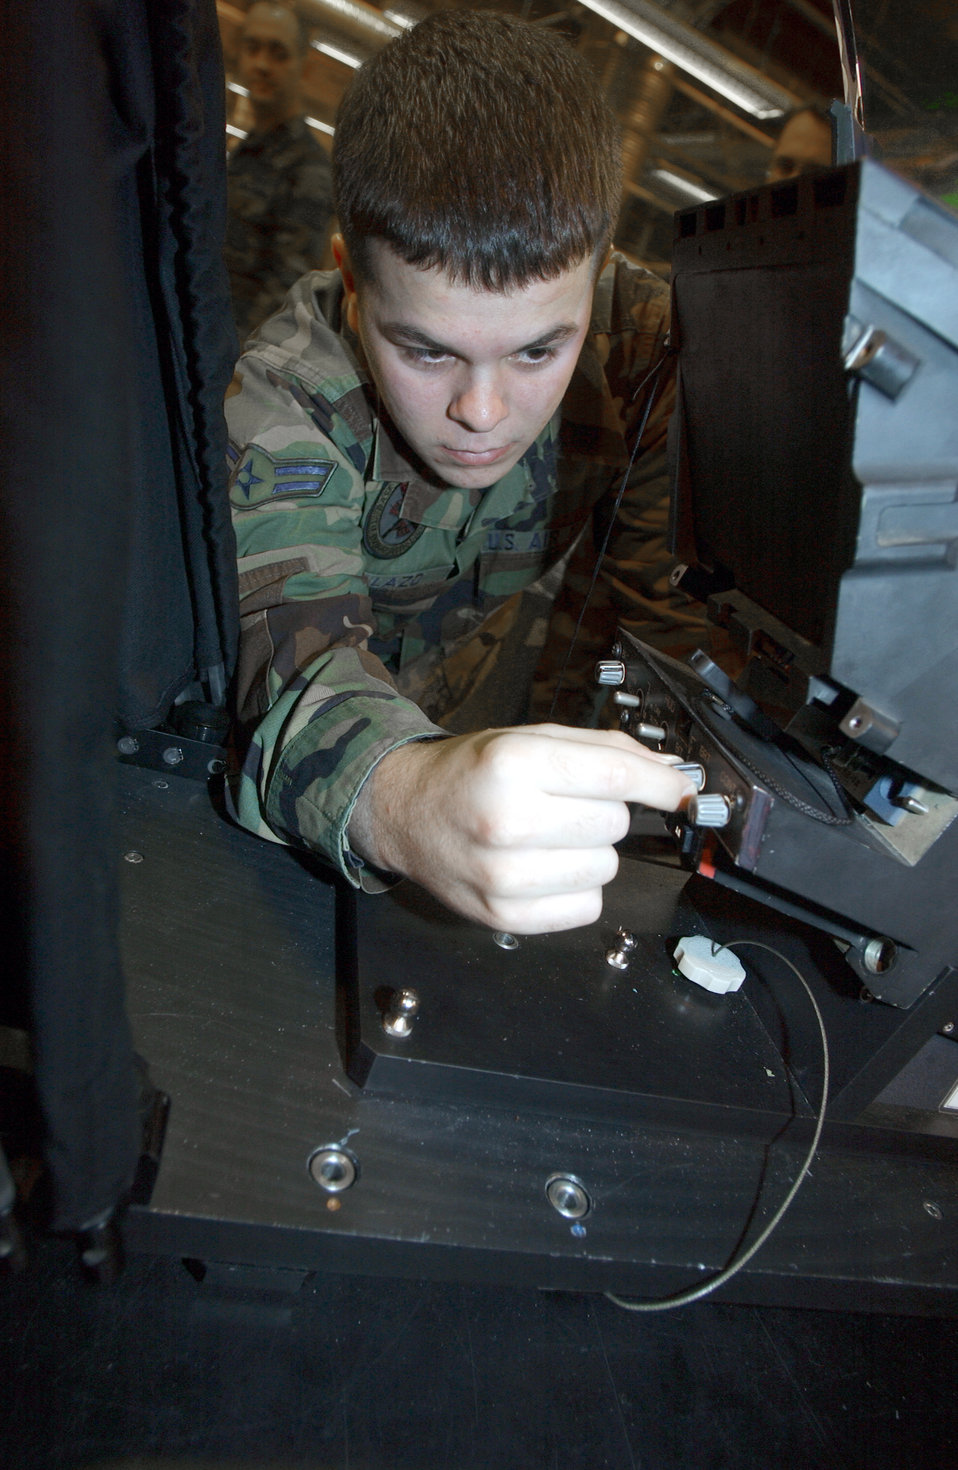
Heads up

ROYAL AIR FORCE LAKENHEATH, England -- Airman 1st Class Nick Callazo performs maintenance on a heads-up display here Feb. 18. A heads-up display puts pilot information on a transparent glass screen at eye level during flight. Airman Callazo is an avionics technician with the 48th Component Maintenance Squadron.